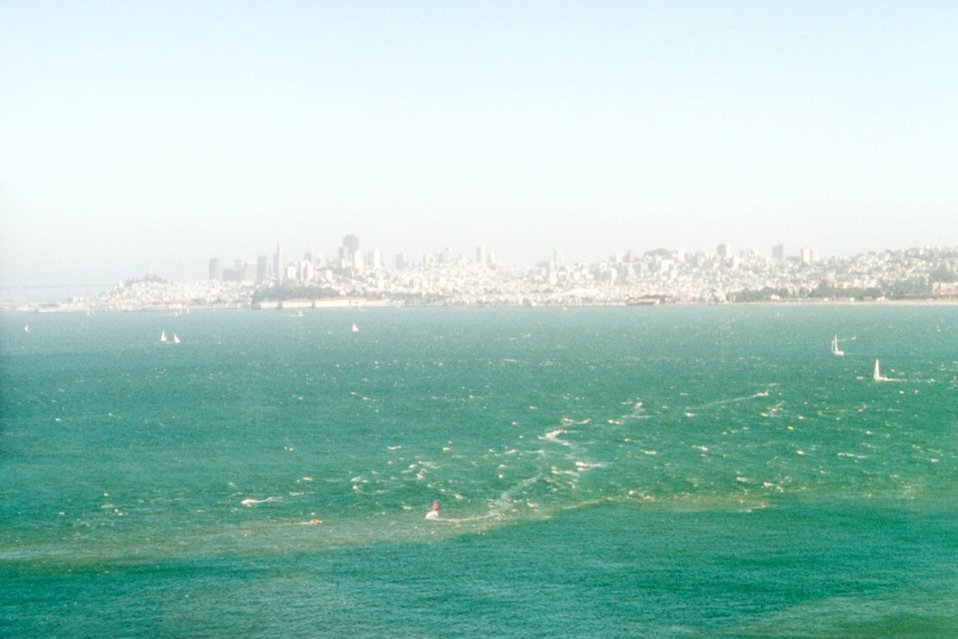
San Francisco Bay tide rips as seen from the Marin side of the Golden Gate.